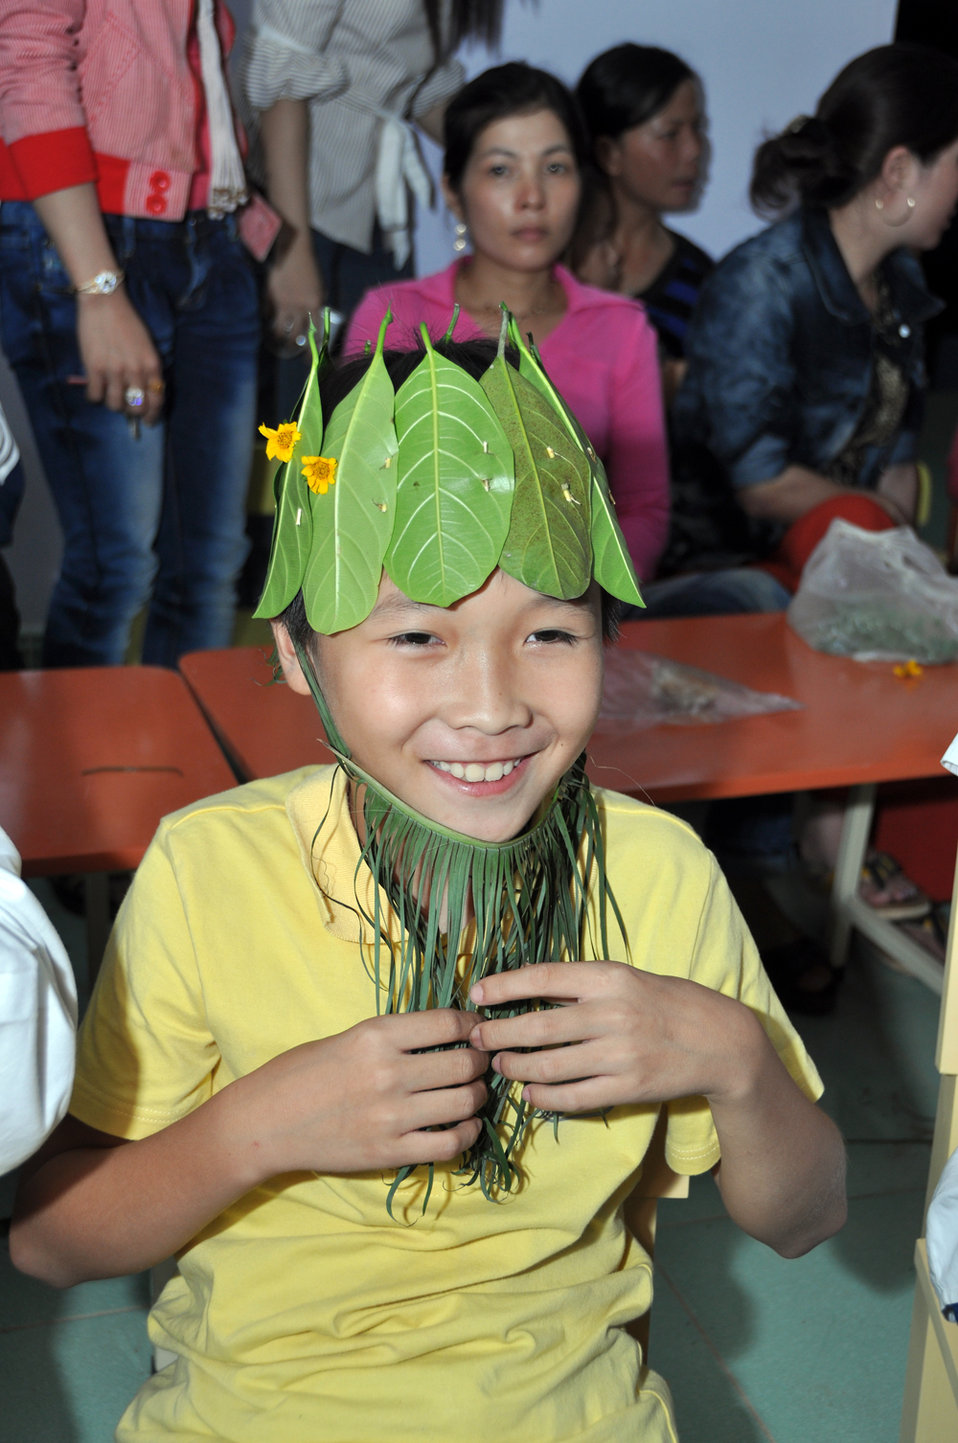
USAID contributes to refurbished pre-schools and teacher training in Vietnam